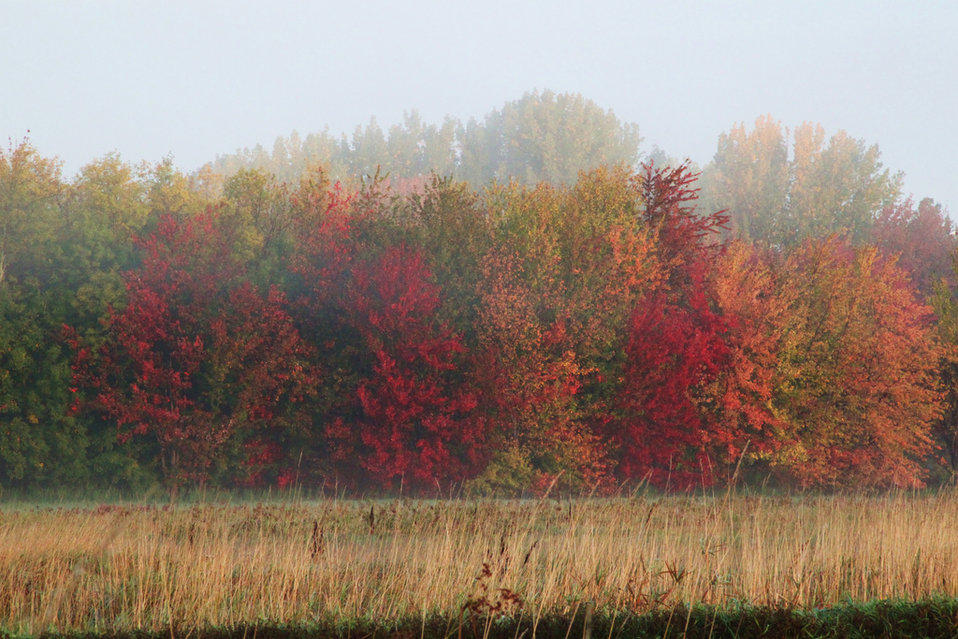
Missisquoi National Wildlife Refuge

Fall foliage at Missisquoi National Wildlife Refuge, VT.